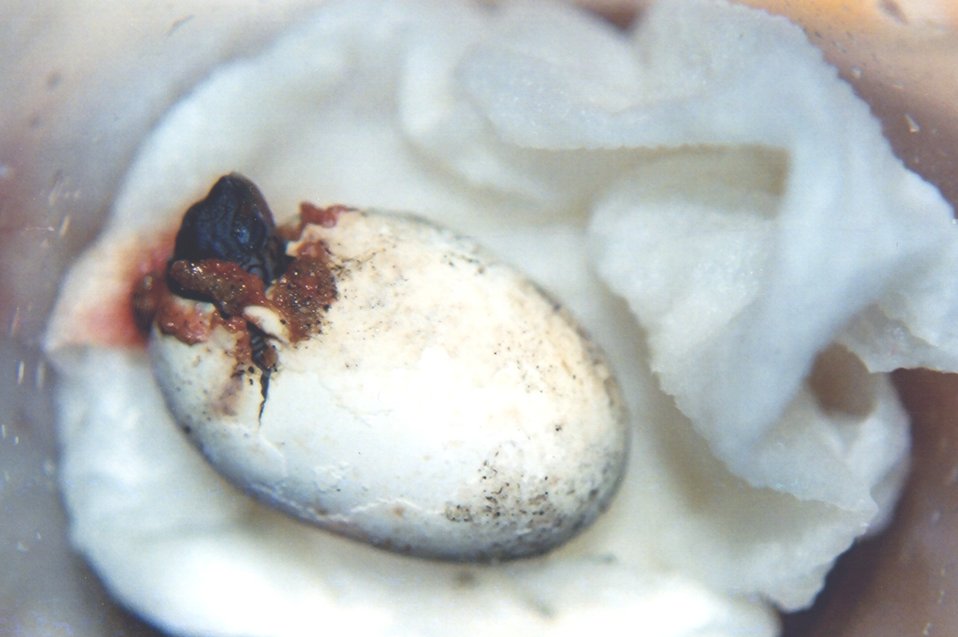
Diamondback terrapin hatchling exiting the shell.